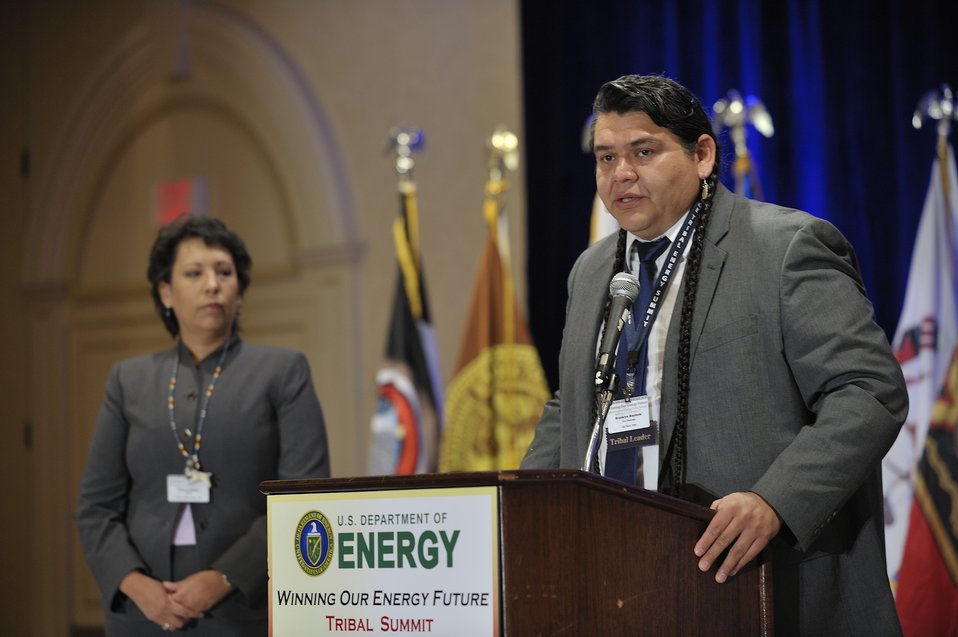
Tribal Energy Summit

Nez Perce Chairman Brooklyn Baptiste offers opening prayer.